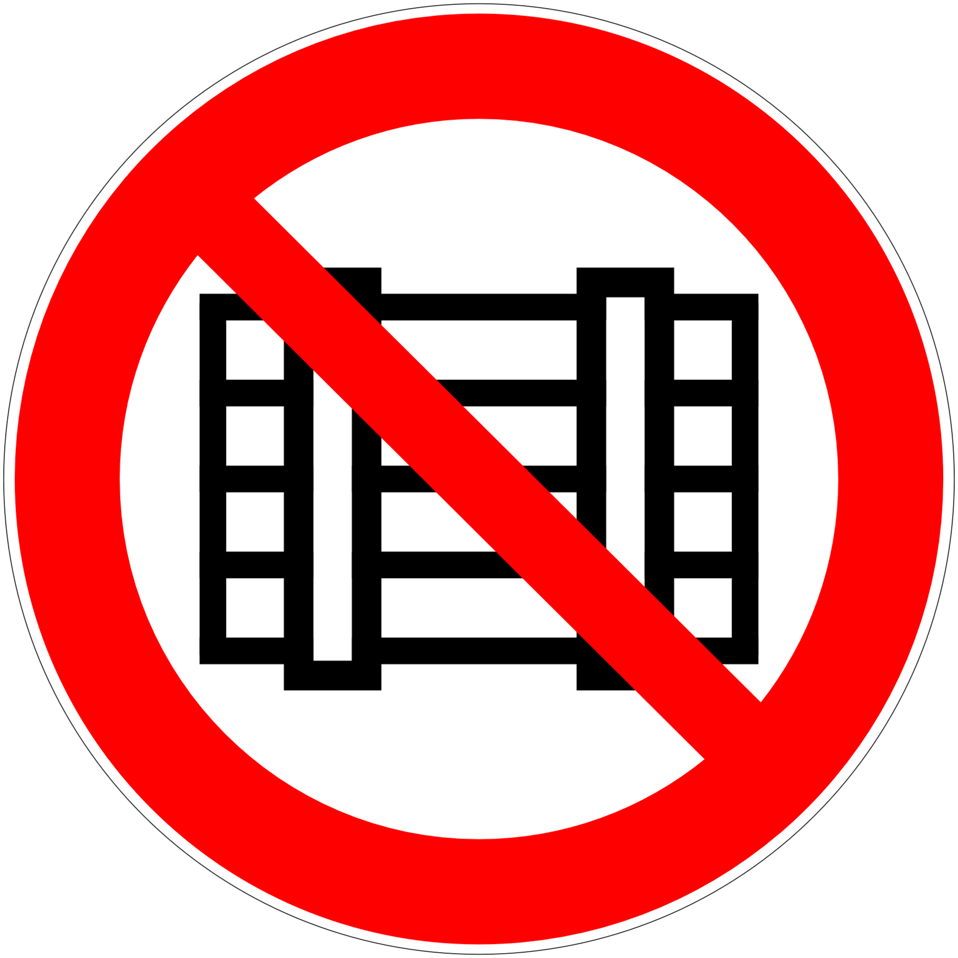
Deutsch: Abstellen oder Lagern verboten, Verbotszeichen D-P012 nach DIN 4844-2